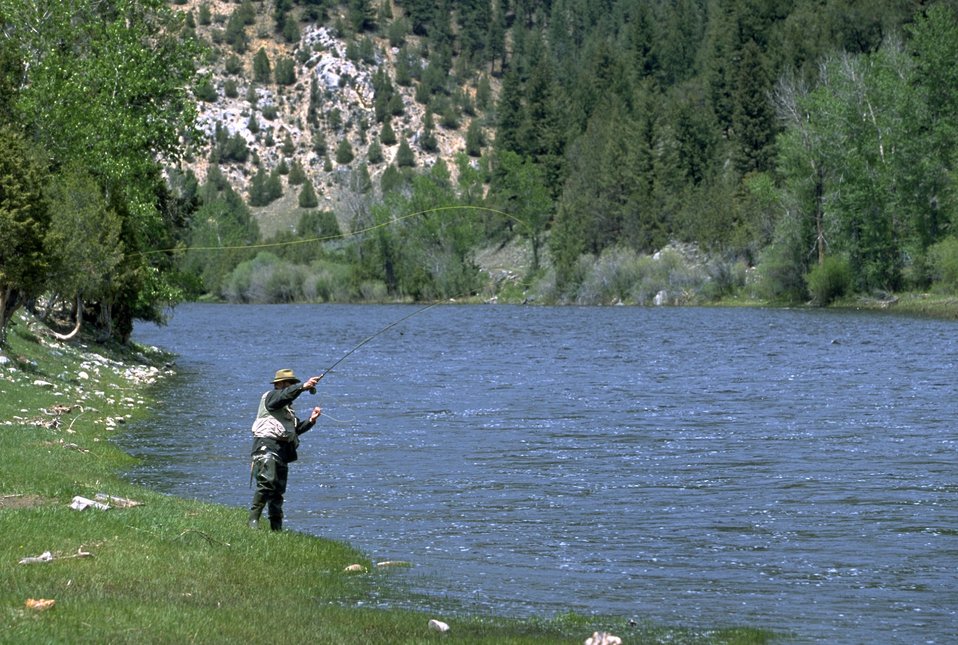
Trying to catch the big one at the Big Hole River